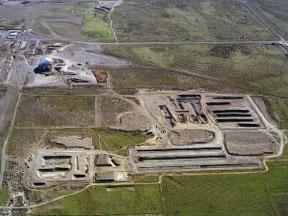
Hanford Milestone

An aerial view of the F Area at Hanford, in Washington, shows a wide range of waste sites during mid-cleanup. The Department of Energy and its River Corridor contractor, Washington Closure, just completed a TPA milestone at the F Area, where 53 waste sites were remediated, backfilled with clean soil and re-vegetated with native plants. The area is located about five miles northwest of the old Hanford town site, in the northern portion of Hanford's 586-square mile nuclear reservation.